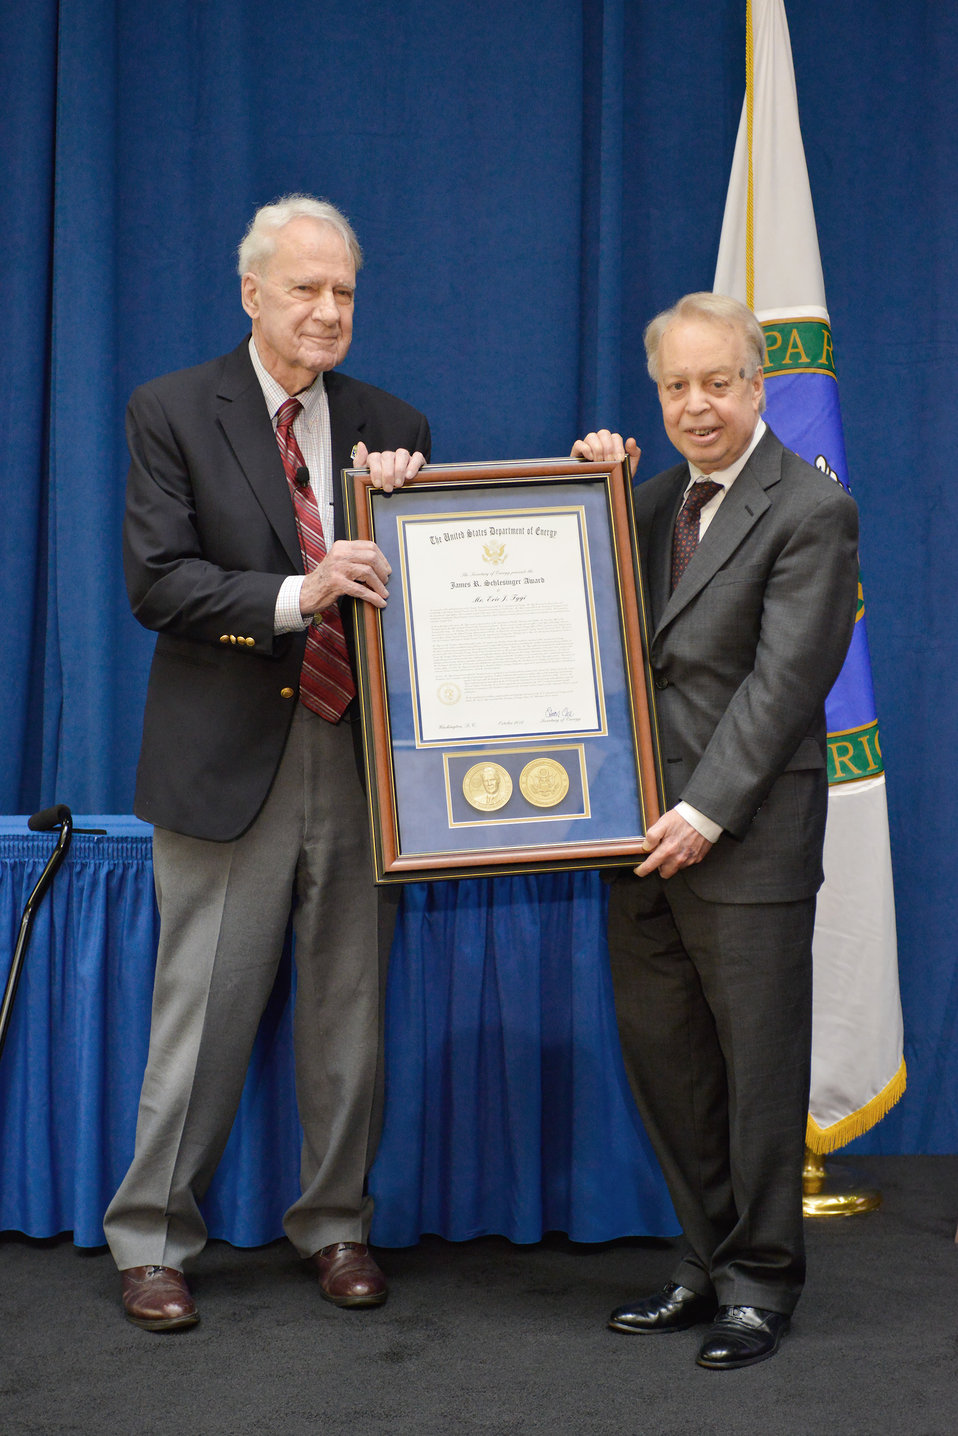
Schlesinger and Fygi

James R. Schlesinger, first Secretary of Energy, presents the James R. Schlesinger Honors Award to Eric Fygi at the 35th Anniversary and Honors Awards ceremony on October 4, 2012.